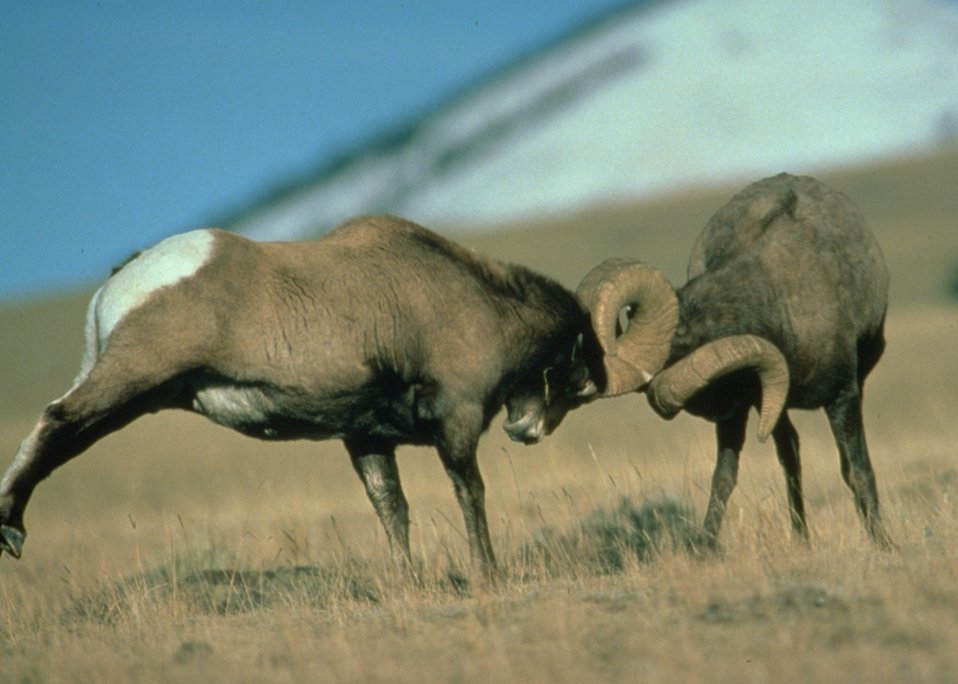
Big horn sheep engaging in battle.